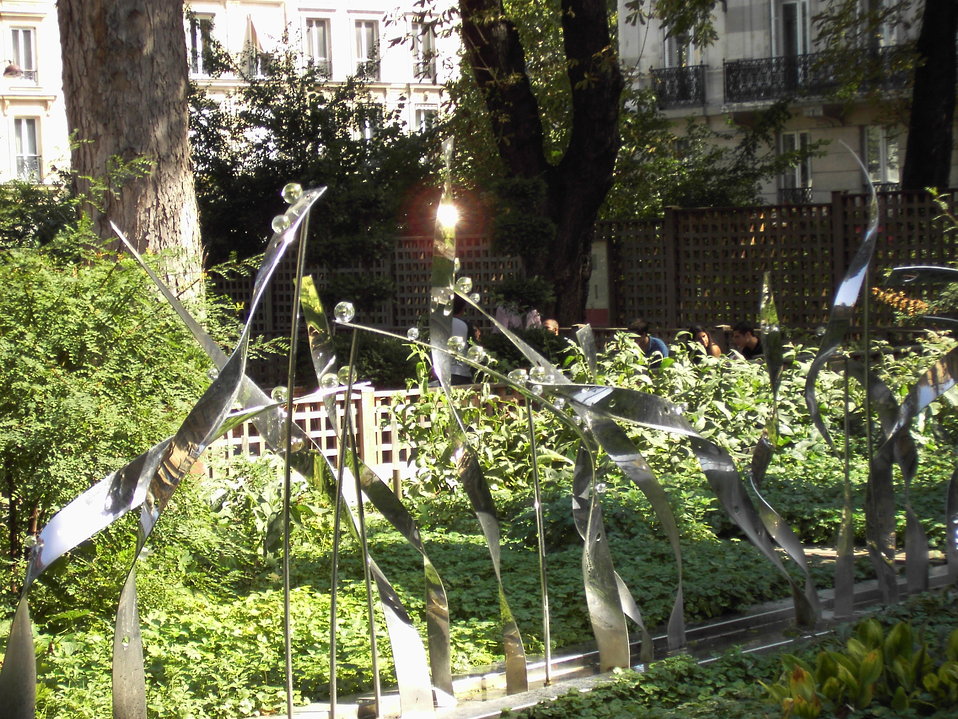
050903 Paris 040 Cluny jardin roseto